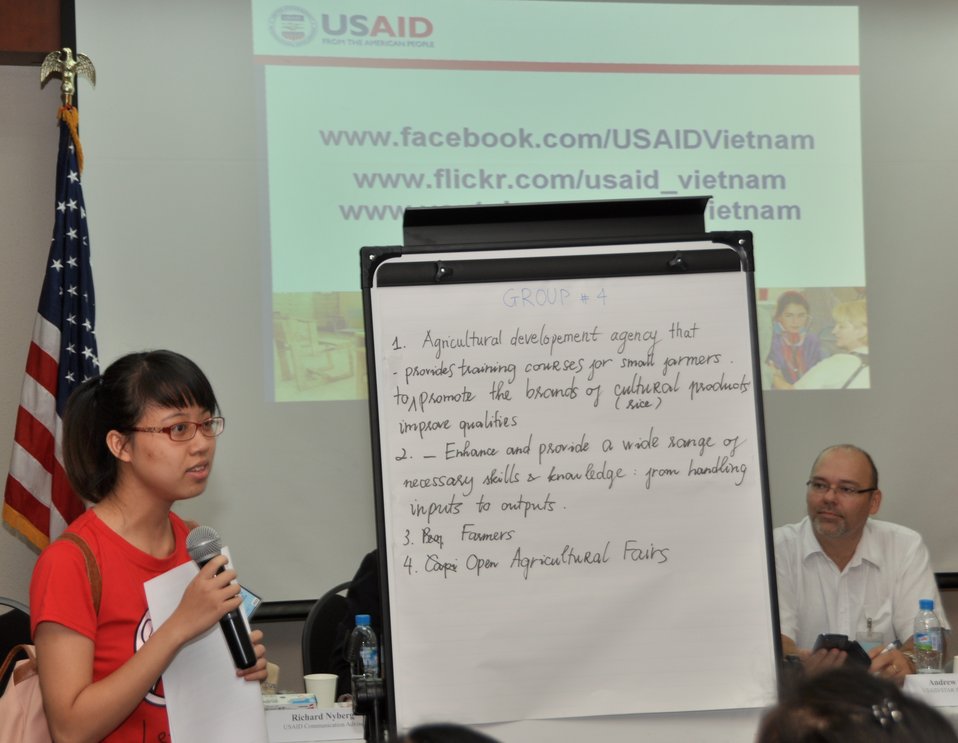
Vietnamese university students join the Business Plan Mashup exercise

Photo: @USAIDVietnam, November 16, 2012